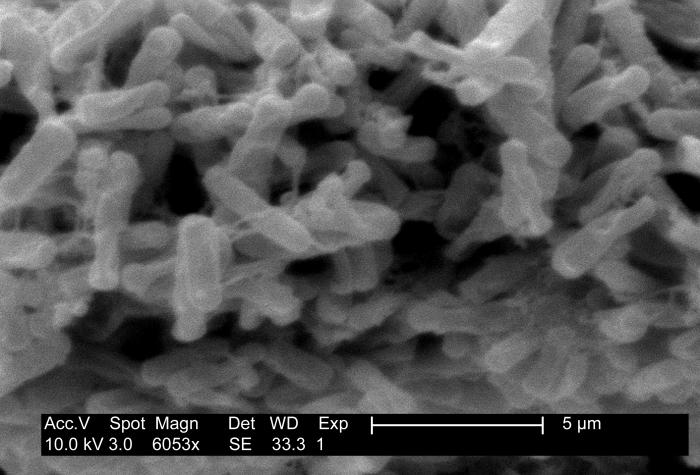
This micrograph depicts Gram-positive C. difficile bacteria from a stool sample culture obtained using a .1�m filter.